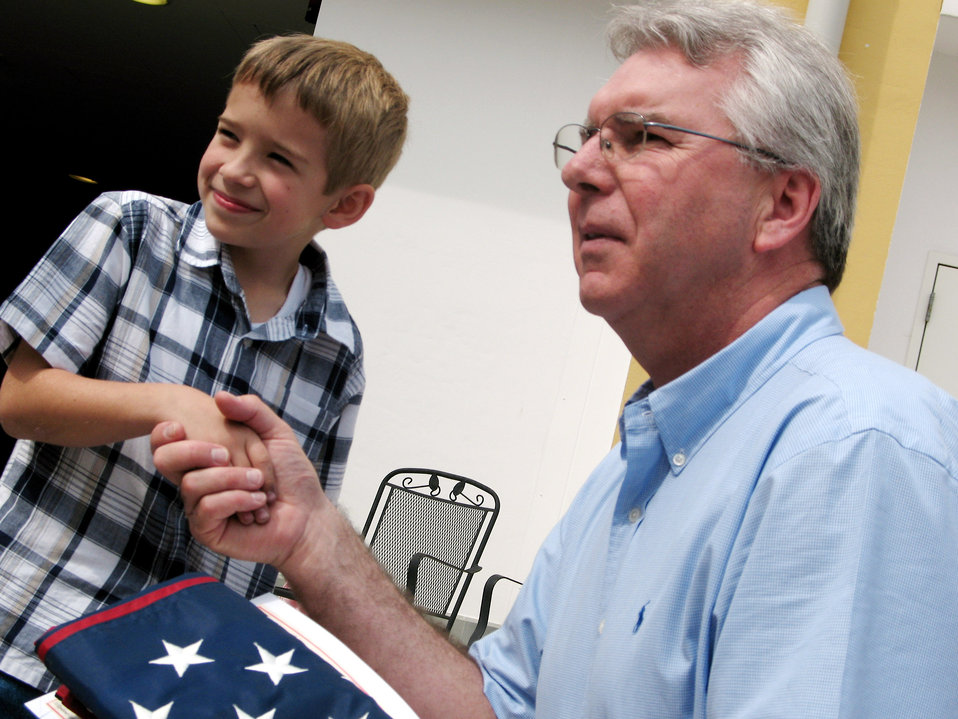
Teachers recognized at Aviano

Brian Peterson presents an American flag to Aviano Elementary School principal Tim Erikson May 10 during the last meeting of the school year for the Aviano Elementary School Deployment Club. The flag had been flown at Brian's father's deployment location in Iraq.